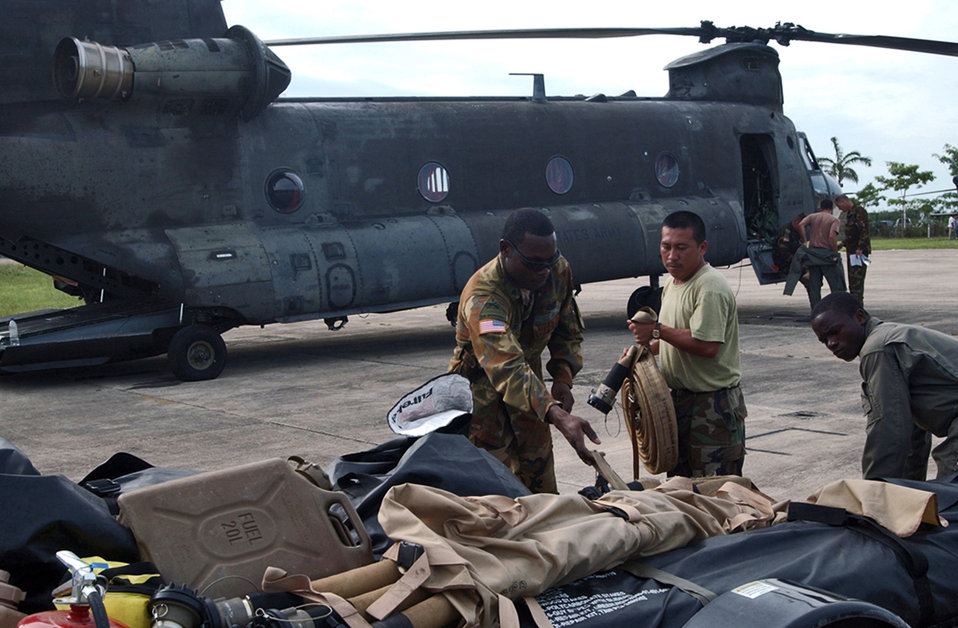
Assessment team arrives in Belize

Army Sgt. Barry Baptiste loads cargo onto a trailer with the help of soldiers from the Belizean Defense Force in Belize City, Belize, Aug. 21. Sergeant Baptiste is here with approximately 20 U.S. Soldiers and Airmen serving on an initial assessment team following the landfall of Hurricane Dean. He is a fuels specialist assigned to the 1st Battalion, 228th Aviation Regiment at Soto Cano Air Base, Honduras.